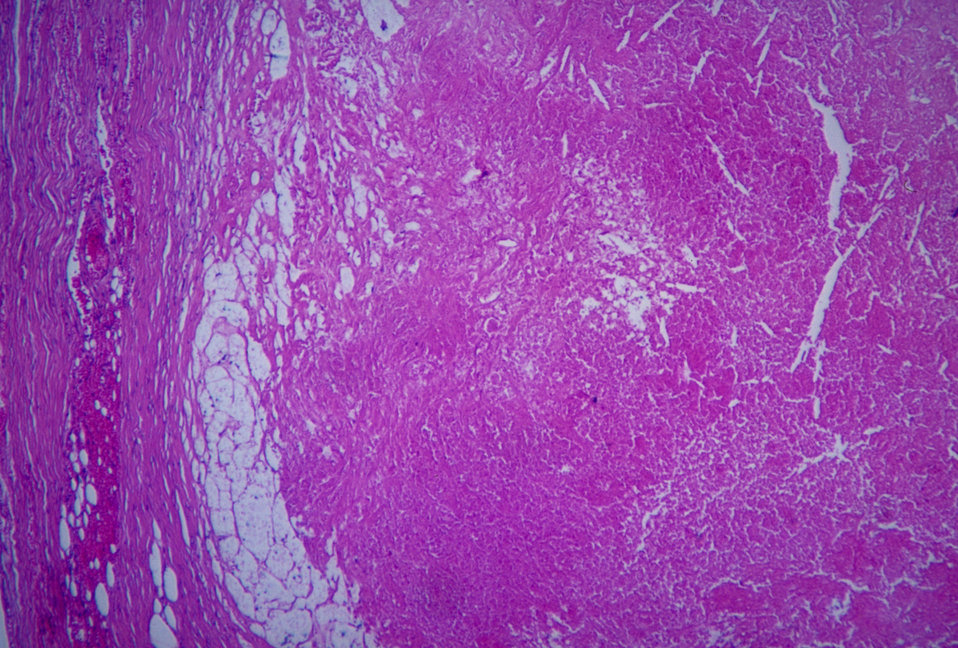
This micrograph depicts the histopathologic changes associated with cryptococcosis of an adrenal gland.